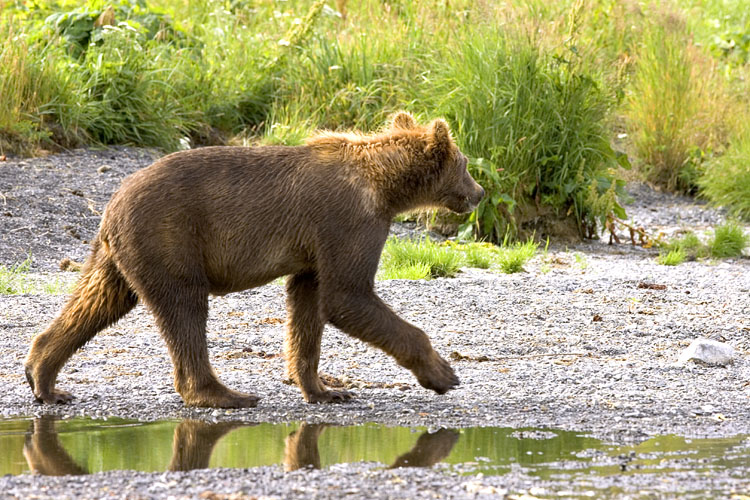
KOD Hildebrand (4)

Kodiak National Wildlife Refuge- Wildlife